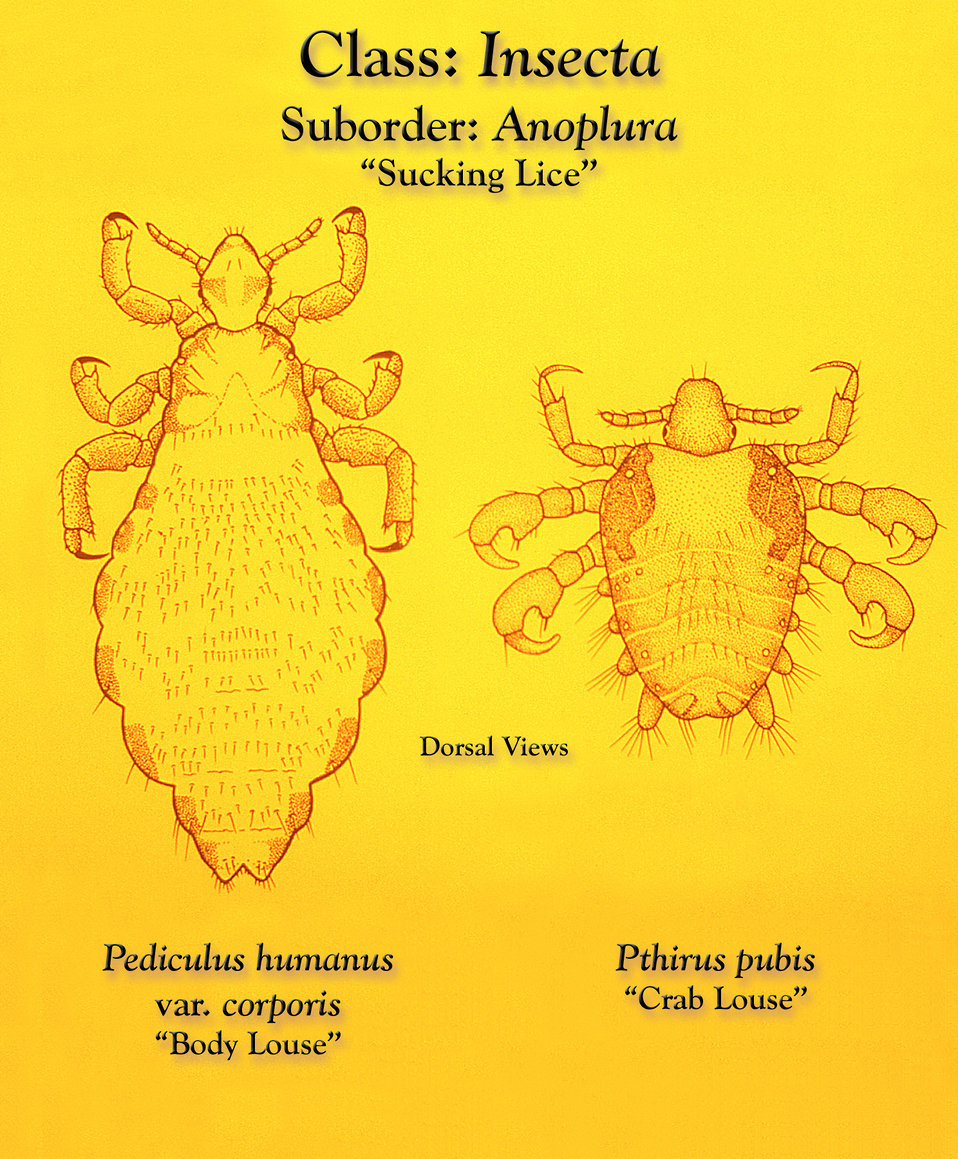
This illustration depicts some of the morphologic differences seen in two 'sucking lice' of the Order Annoplura. The louse on the left is a 'body louse', Pediculus humanus var. corporis, and the louse on the right is a 'crab' or 'pubic louse', Pthirus pubis.